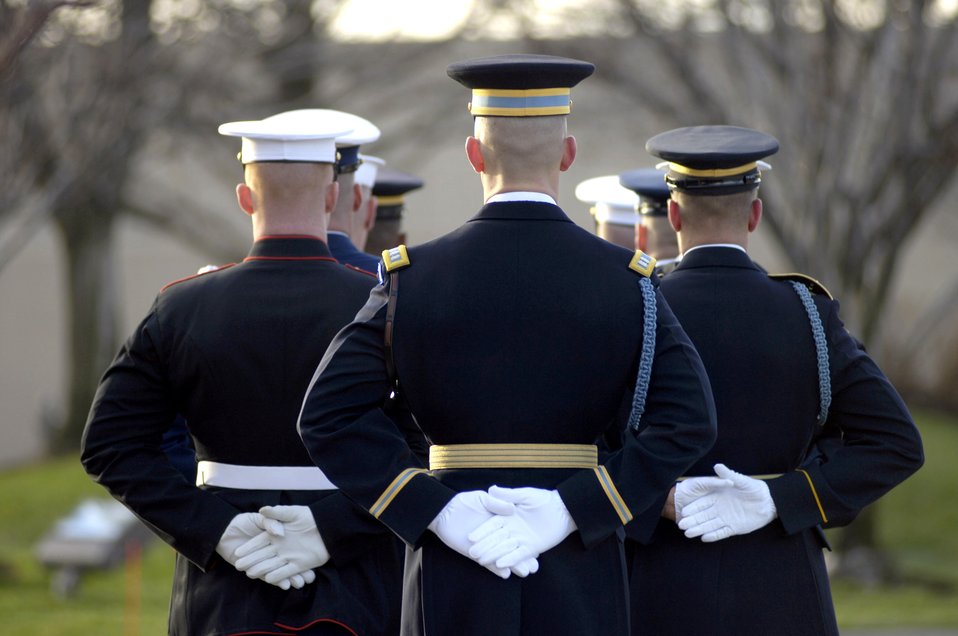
Honor Guard gives President Ford final honors

The Armed Forces Honor Guard prepares for the arrival of President Gerald R. Ford's body in front of the the Gerald R. Ford Presidential Library and Museum Jan. 2 in Grand Rapids, Mich.